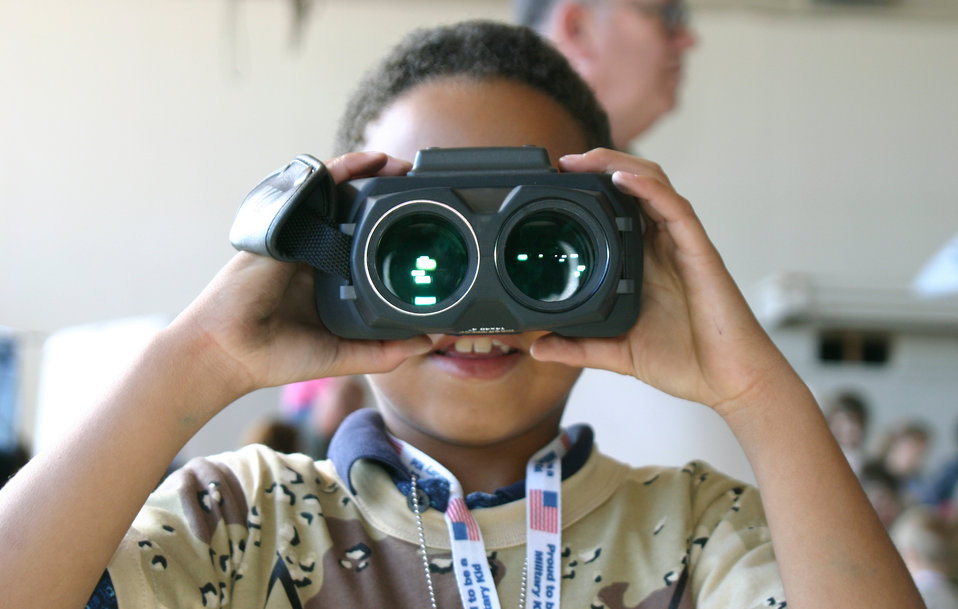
Children process through mobility line, experience military deployment

SHEPPARD AIR FORCE BASE, Texas -- Josiah Vandecruze looks through a pair of night-vision binoculars during Operation Kids Investigating Deployment Services. The operation gave children an opportunity to see what their parents go through during a deployment.